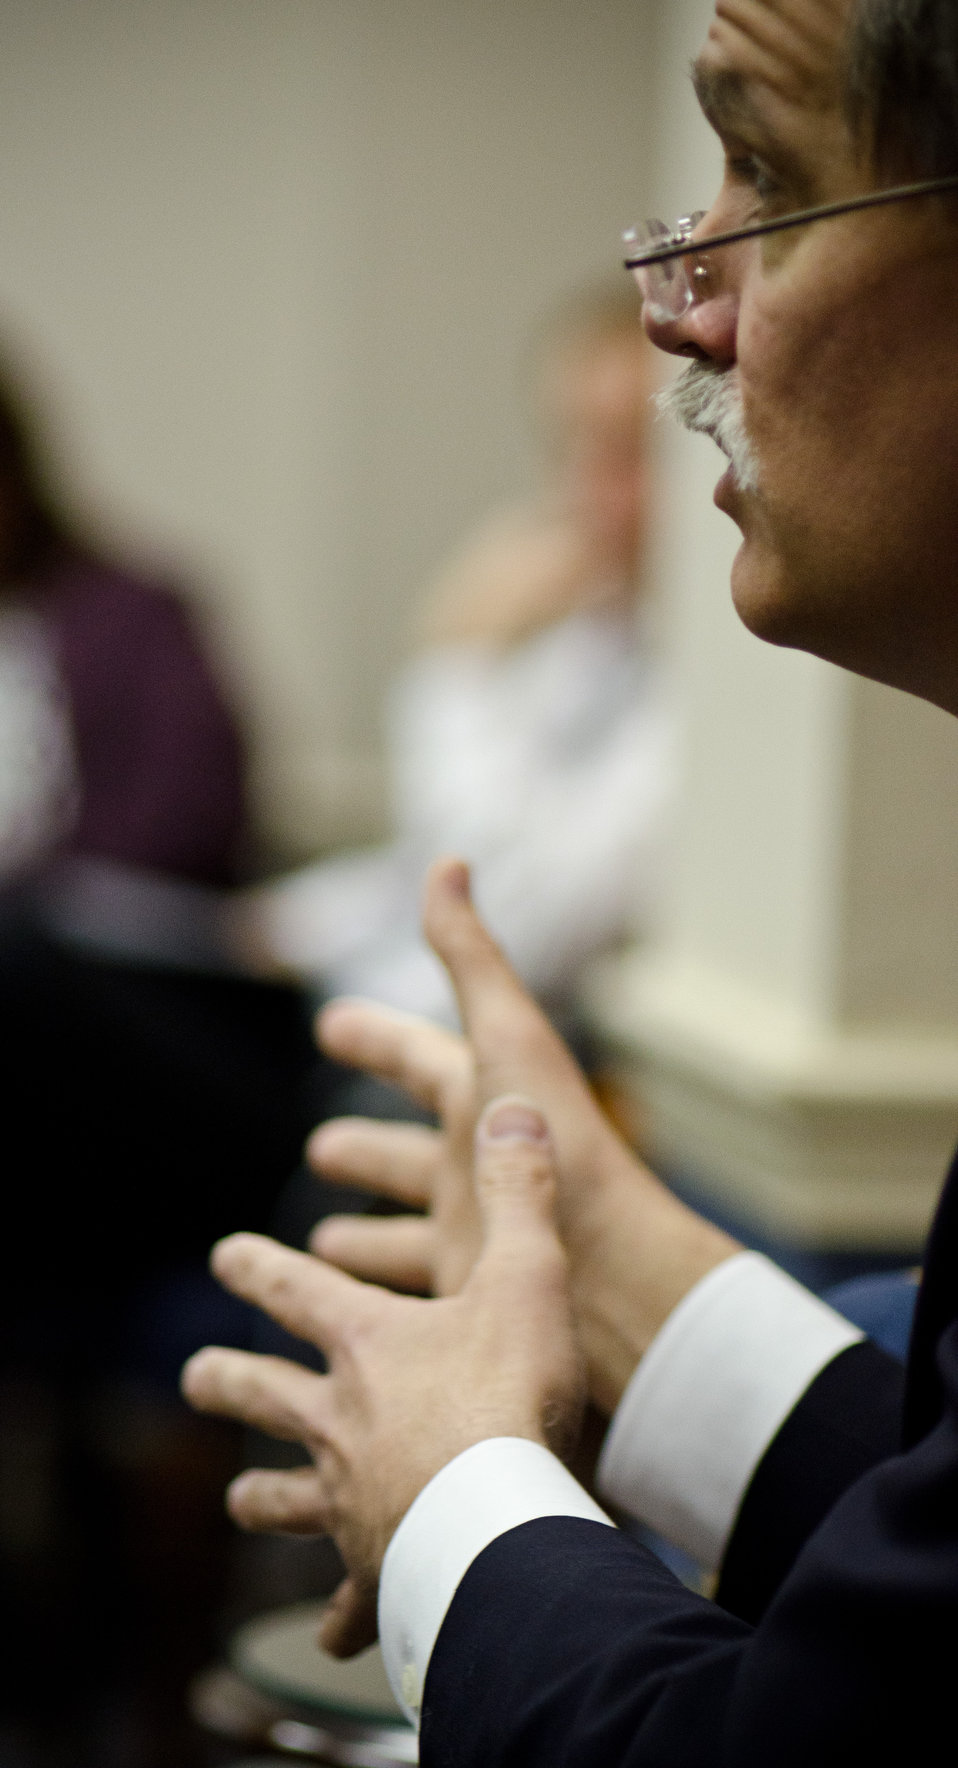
U.S. Department of Agriculture Associate General Counsel for Rural Development David Grahn, emphasizes equality in the speed in which issues are addressed and processed, during an Office of Tribal Relations meeting in Washington, DC, on Monday, March 28, 2011.